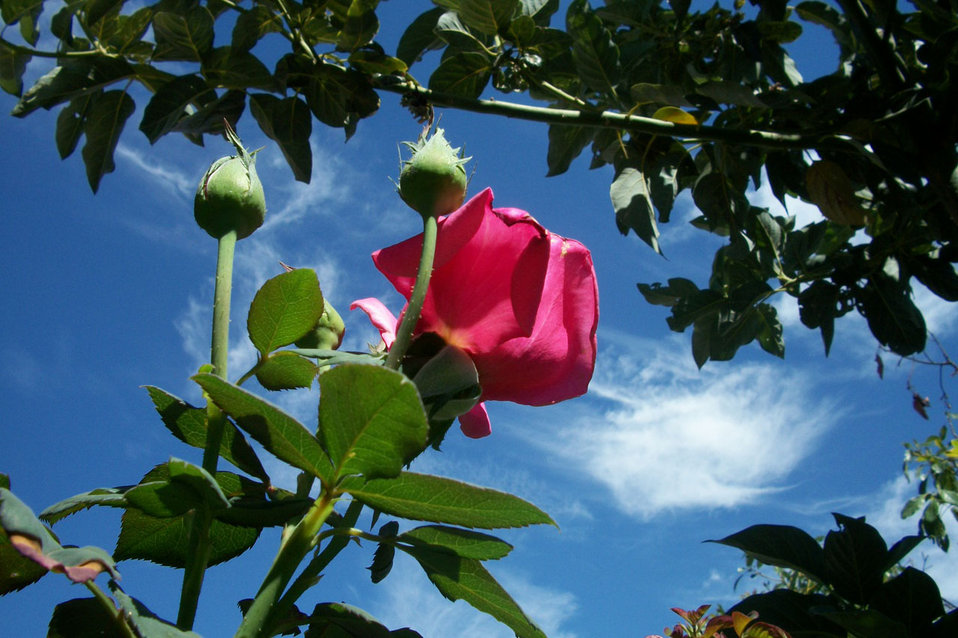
Rose looked up to heaven.